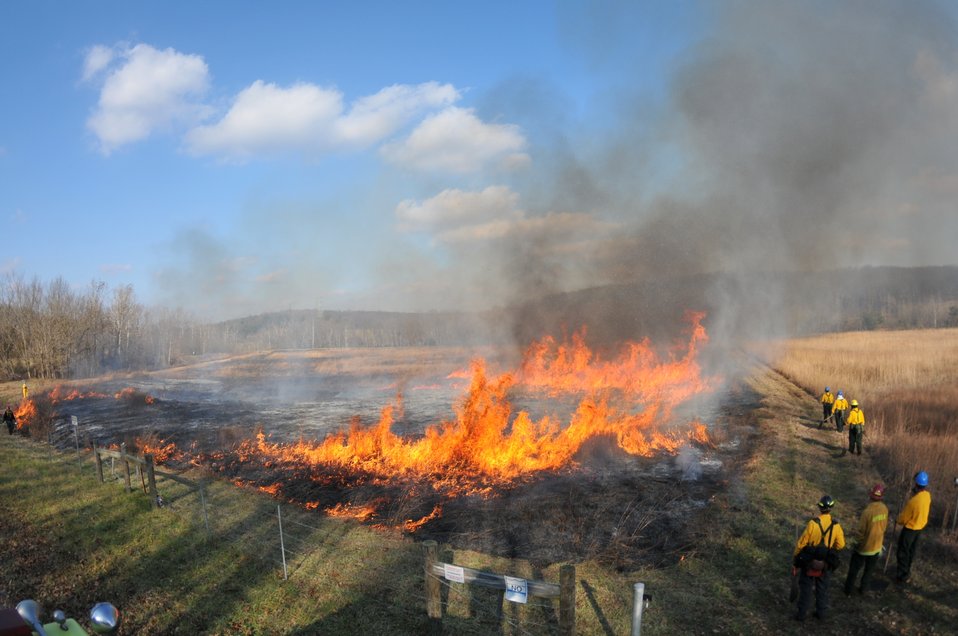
Successful controlled burn at Portsmouth

A controlled prairie burn was conducted at the Portsmouth site on Dec. 18, 2011.
***
Portsmouth Gaseous Diffusion Plant firefighters recently completed a prescribed fire, or controlled burn, of an 18-acre prairie at the site, two weeks ahead of a regulatory deadline.
“Burning the prairie in a controlled manner stimulates the germination of prairie grasses and reduces the invasion of woody plants to maintain a healthy prairie ecosystem,” said DOE Site Director Vince Adams.
The prairie ecosystem was the result of remediation of former lime sludge lagoons that settled out waste lime from the plant’s water treatment plant.